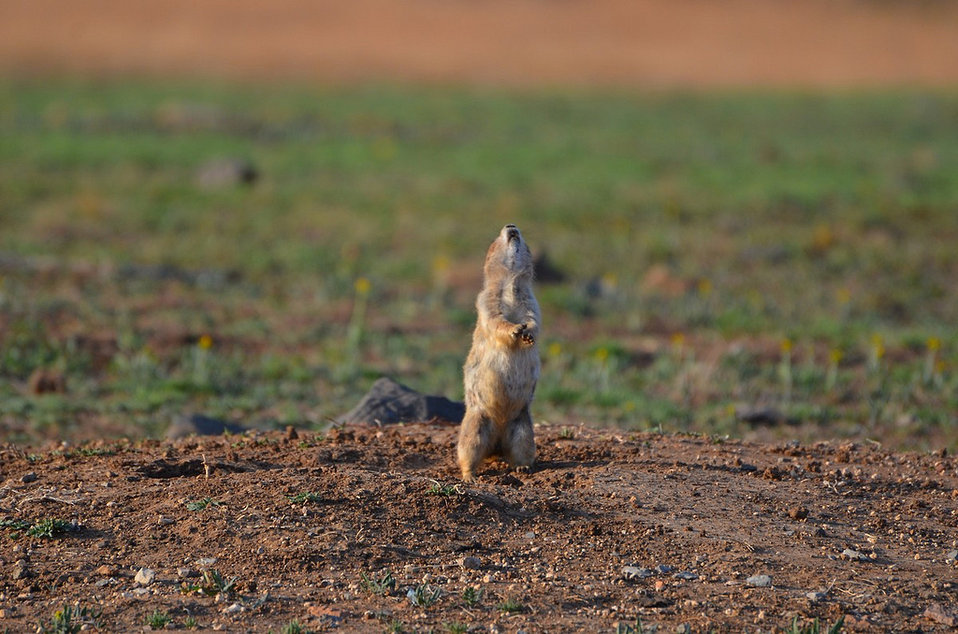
prairie dog sentry

Wichita Mountains National Wildlife Refuge, OK
Photo: Squarehappyface, Creative Commons
In 1905 Congress recognized the importance of the Wichita Mountains' ancient geological formations and wildlife, creating the Wichita Mountains Forest Reserve and Game Preserve - later a national wildlife refuge.